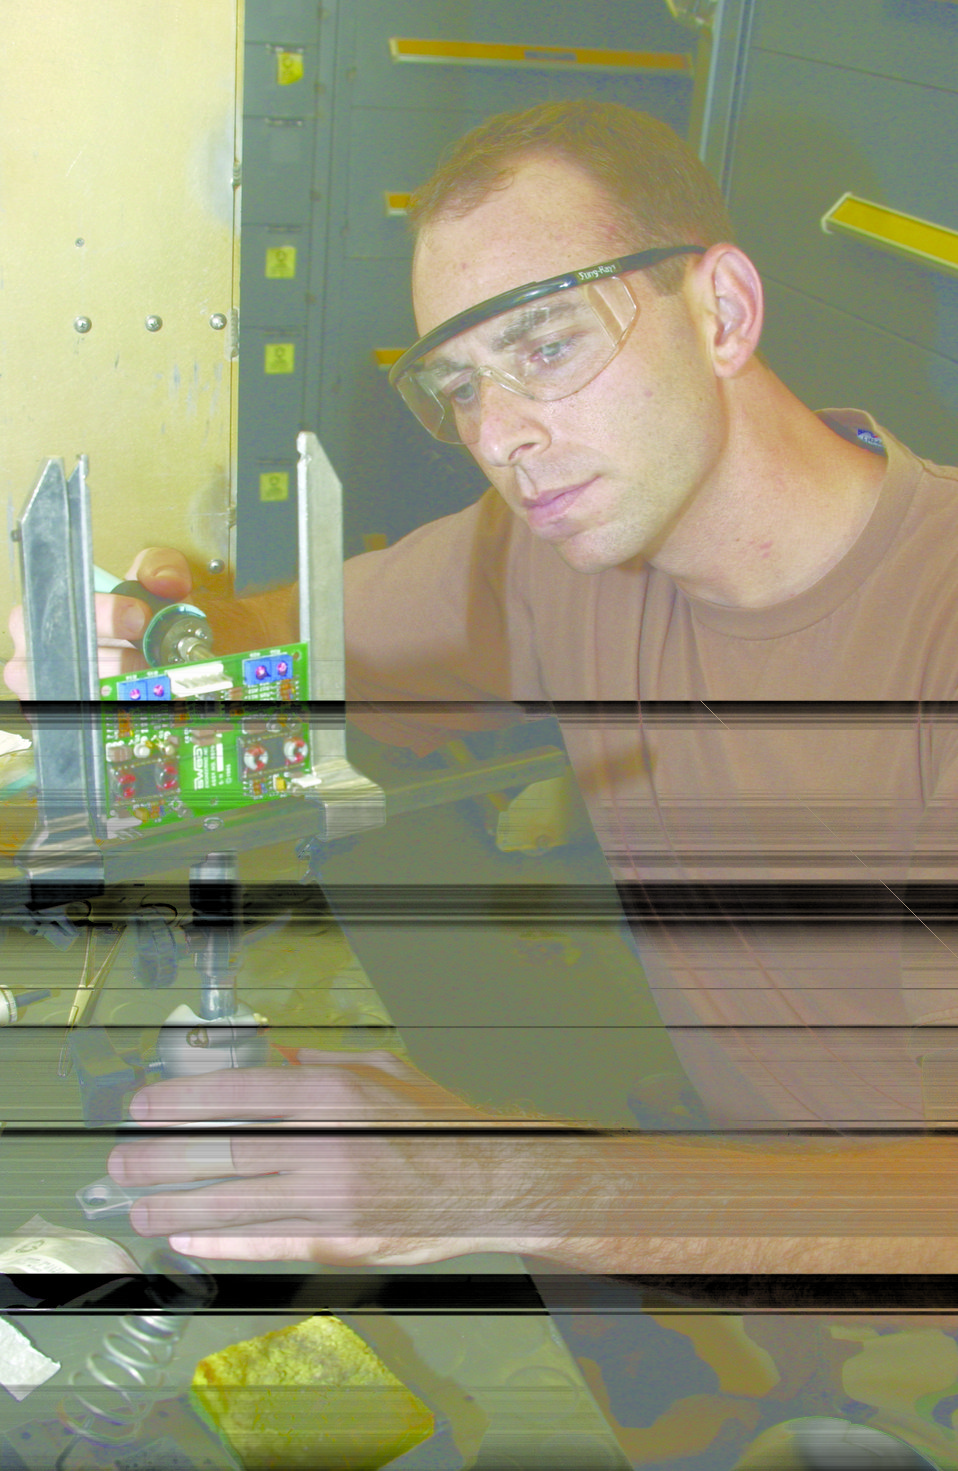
MUTES

Staff Sgt. Scott Campbell, 266th Range Squadron ground radar technician, solders a transistor on a circuit card for the Multiple Threat Emitter System at Andersen Air Force Base, Guam. The MUTES offers B-52 electronic warfare officers of the 23rd Expeditionary Bomb Squadron training opportunities to quickly identify simulated threats to their aircraft, such as surface-to-air missiles. Sergeant Campbell is deployed from Mountain Home Air Force Base, Idaho.